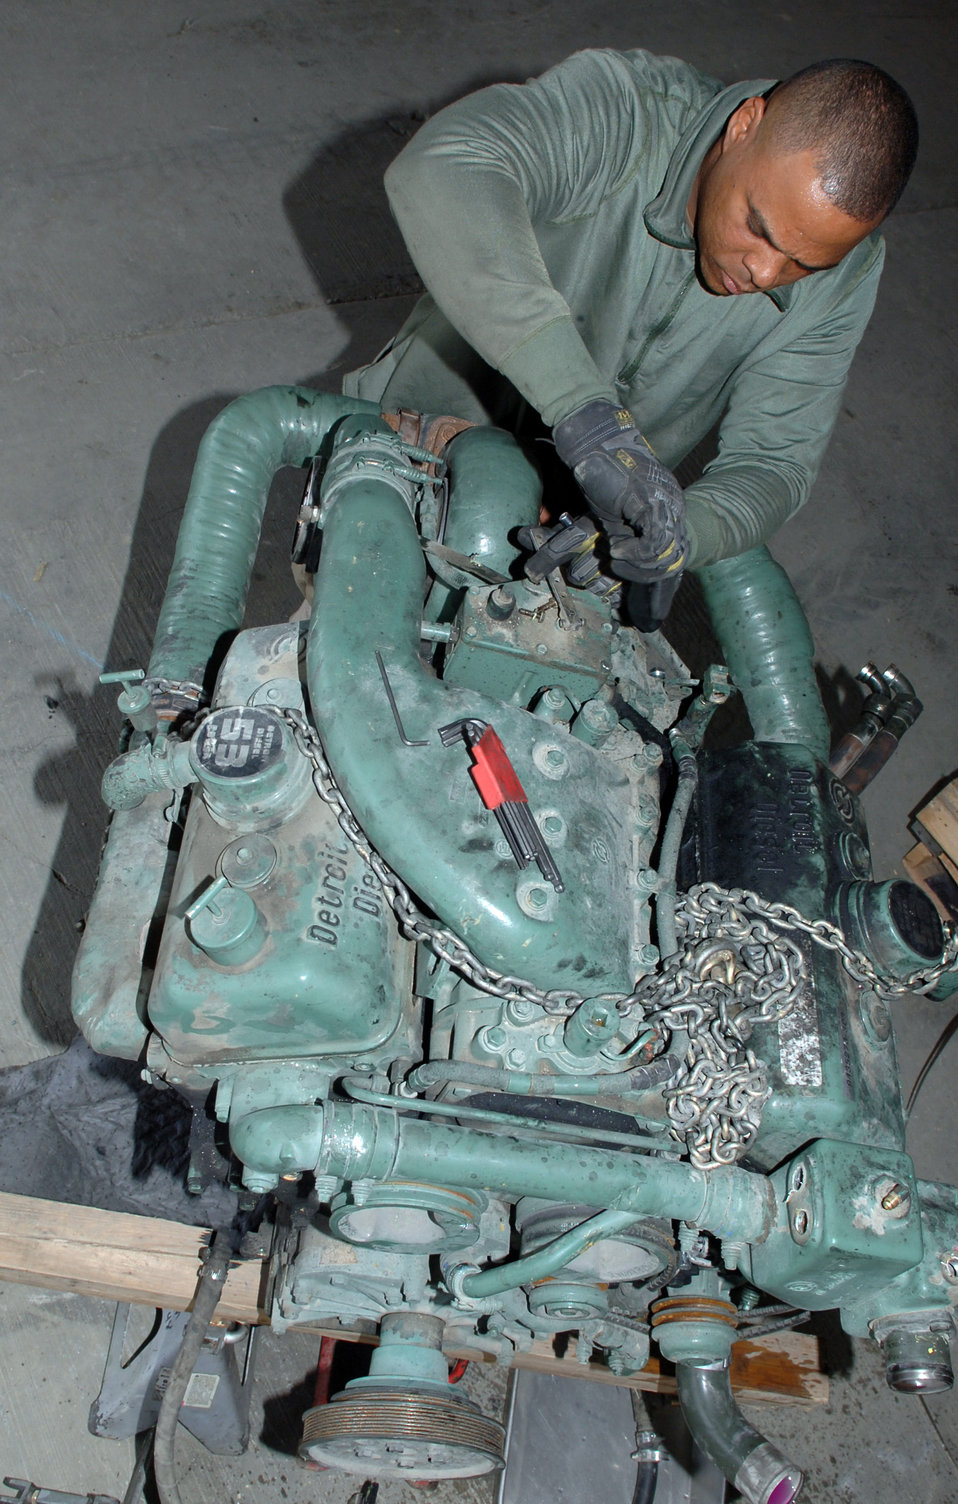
Mechanics work to keep vehicles in motion

Staff Sgt. Andre McDonald removes oil fittings from an old 60K aircraft loader engine. Sergeant McDonald is deployed to the 455th Logistic Readiness Squadron from Aviano Air Base, Italy.